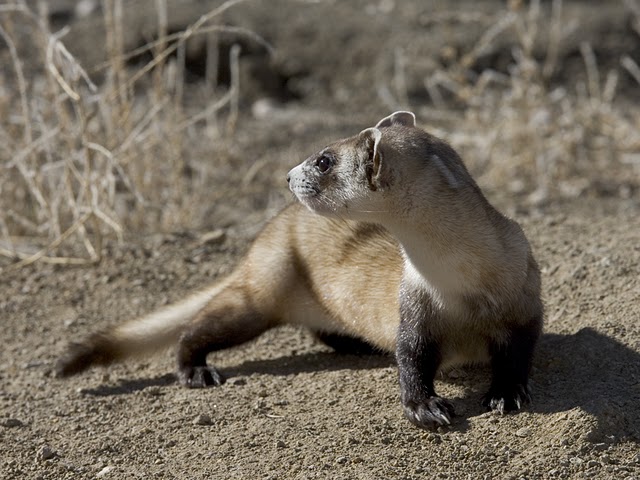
National Black-footed Ferret Conservation Center